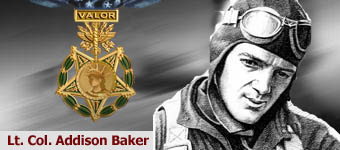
Lt. Col. Addison E . Baker

Medal of Honor recipient, Lt. Col. Addison E. Baker.